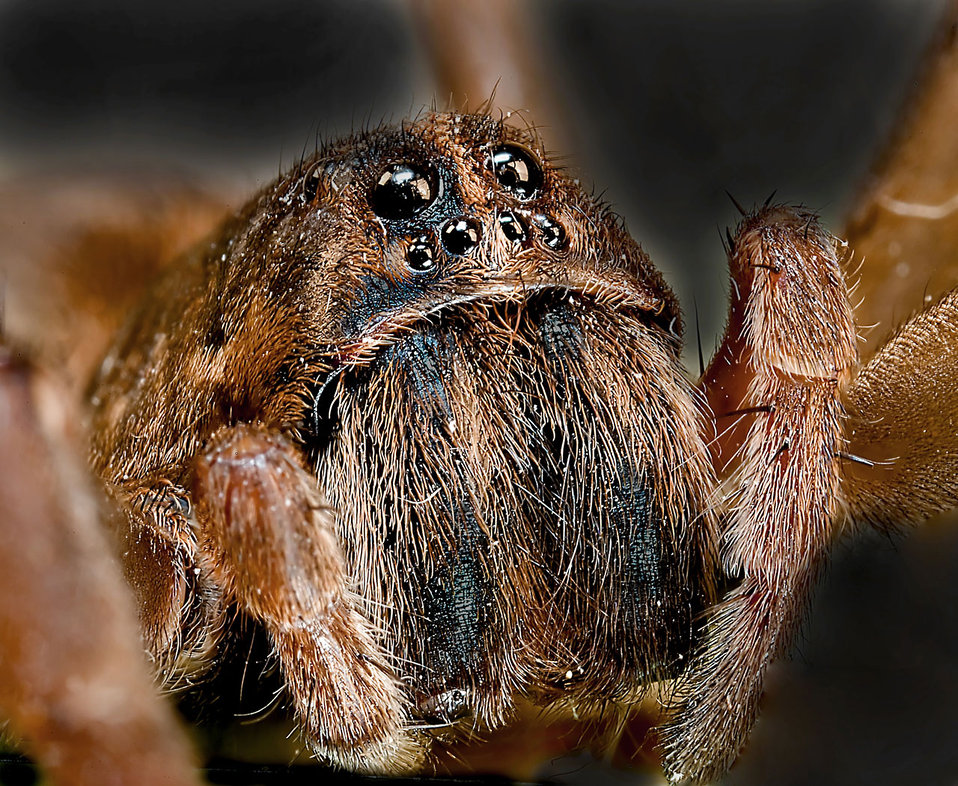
Wolf spider

A macro of a large wolf spider.